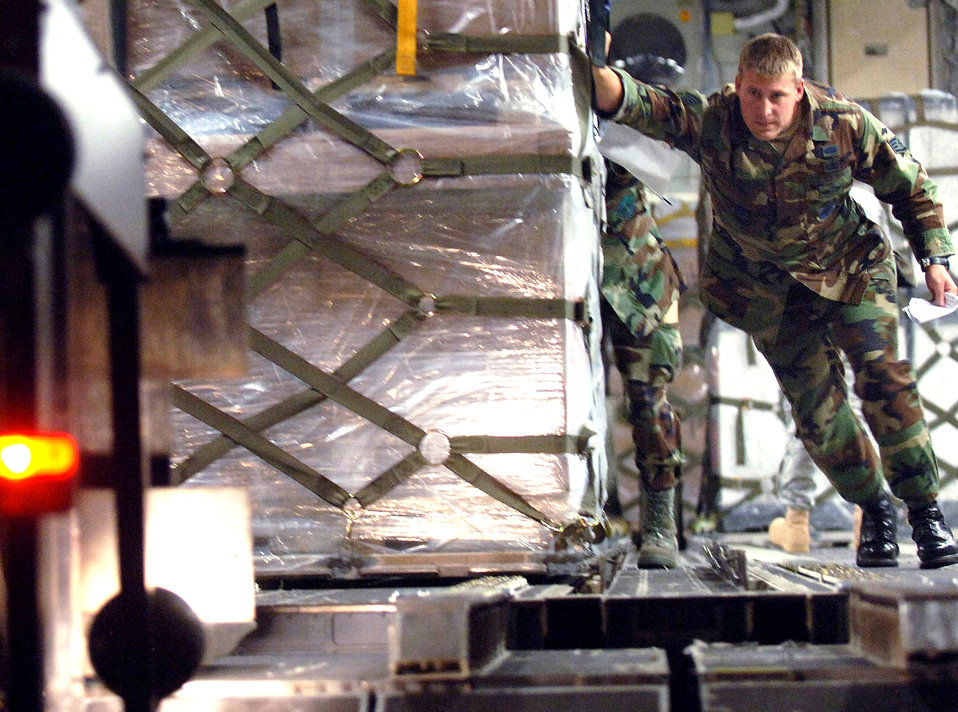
Ramstein members deliver aid to Georgia

Staff Sgt. Chris Broegemueller helps push out the first of 16 pallets aboard a C-17 Globemaster III Aug. 13 at Sembach Air Base, Germany. The humanitarian assistance delivery consisted of $1 million in U.S.-donated medical supplies, blankets, sleeping bags and bed sheets for the people of the Republic of Georgia. The delivery was a joint service effort between Airmen representing both U.S. Air Forces in Europe and Air Mobility Command, as well as U.S. Army Europe Soldiers. Sergeant Broegemueller is an aerial transporter assigned to the 86th Airlift Wing's Contingency Response Group.